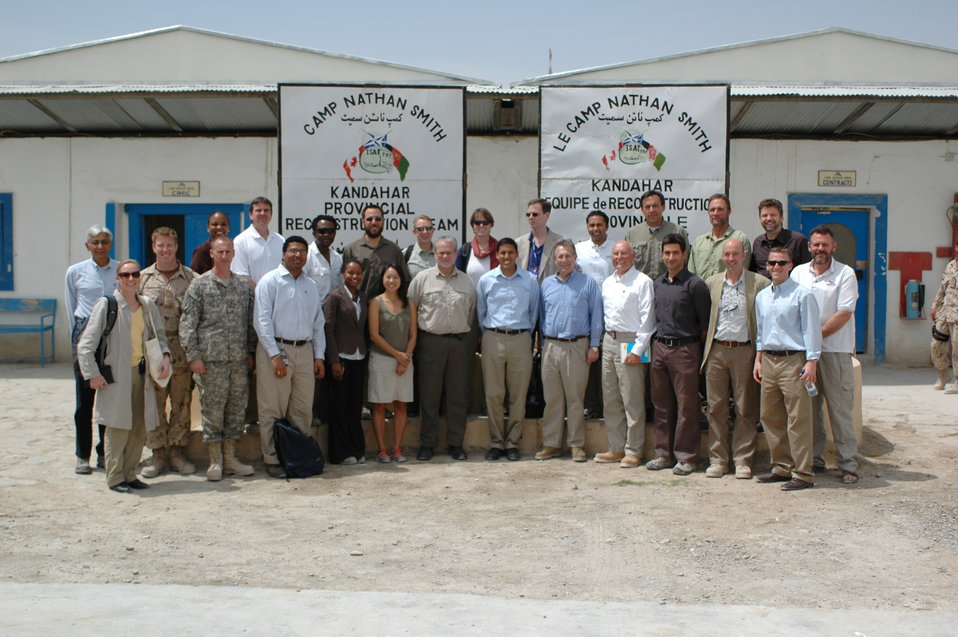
Dr Shah Visits Kandahar April 9, 2010